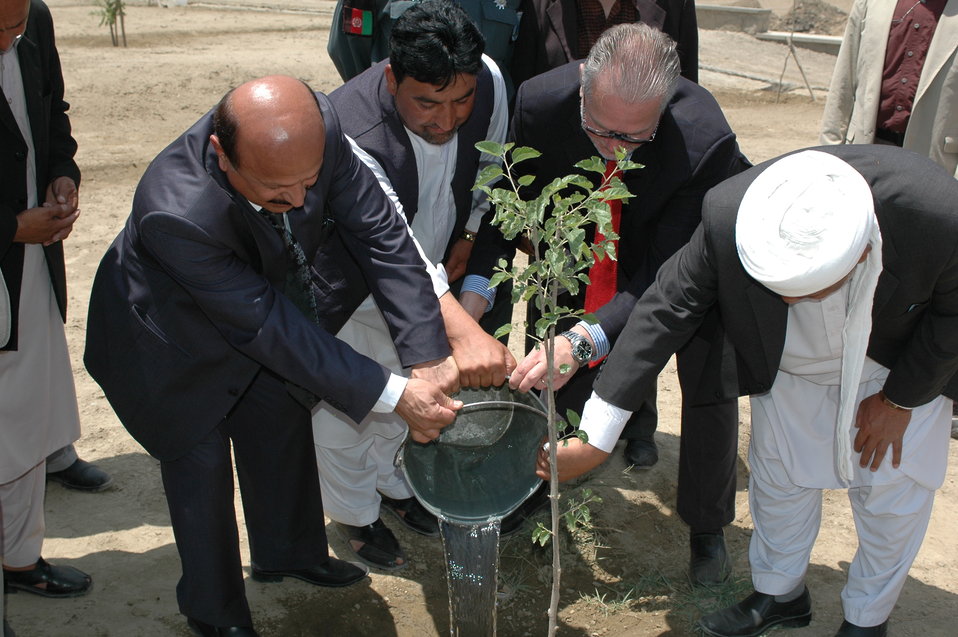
باغ تاریخی قاضی در شهر کهنه کابل بازسازی میگردد

کابل، افغانستان، 19 جون – شاروال کابل آقای محمد یوسف نواندیش، ریس اداره انکشافی بین المللی ایالات متحده امریکا (USAID)، کارمندان افغانی، مهمانان گرامی و مساعدت کننده گان بین المللی امروز در محفل نهال شانی که جهت گرامیداشت از آغاز مرحله دوم بازسازی باغ قاضی (یک باغ تاریخی در شهر کهنه کابل میباشد) برگزار گردیده بود، اشتراک نمودند.

اکثریت درختان این باغ تاریخی که مساحت آن 3.5 هکتاربوده، در دوران اشغال شوروی قطع شده بودند و از ساحه مذکور به حیث مندوی استفاده میشد که بعد ها محل تجمع کثافات و فضله جات انسانی گردید. سال گذشته شاروالی کابل تصمیم گرفت که باغ مذکور را به شکل اولی آن برگرداند و با یک موسسه غیر دولتی جرمنی یکجا کار پاک کاری و دور نمودن تعمیر های کهنه این ساحه را آغاز نمود.

بعد از پاک کاری ساحه که بیشتر از نیم باغ در حال تکمیل شدن است، حکومت ایالات متحده امریکا با مرکز کلتوری آغا خان Aga Khan Trust for Culture (AKTC) و شاروالی کابل دست هم داده که این پروژه را تکمیل نمایند. شاروال کابل آقای نواندیش اظهار داشت،' چند هفته قبل ما در پارک بی بی مهرو نوار را قطع نمودیم و من خیلی خرسندم که حالا بازسازی یک ساحه سبز دیگر را در اینجا شاهد هستیم. این جز برنامه ما بوده که میخواهیم کابل راسبز نماییم و امسال پلان داریم که حد اقل 10 پارک را در شهر کابل بازسازی نماییم.' شاروال کابل از سفارت امریکا و تمام مساعدت کننده های بین المللی که در بدست آوردن این هدف با شاروالی کار مینمایند، اظهار سپاس نمود.

باغ بازسازی شده که بزرگترین ساحه سبز در شهر کهنه کابل بوده، دارای چندین ساحه کوچک در میان درختان برای میله های فامیلی، میدان فوتبال و ساحه بازی برای اطفال، خواهد بود. کمک بلاعوض 533,000 دالری اداره انکشافی بین المللی ایالات متحده امریکا تکمیل بازسازی این پارک و همچنان ارزیابی دقیق شهر کهنه کابل را که در شناسایی پروژه های آینده برای این ناحیه کمک مینماید، تمویل خواهد نمود. ریس اداره انکشافی بین المللی ایالات متحده امریکا آقای بل فری اظهار داشت،' من ازمحترم شاروال نواندیش و رهبری عالی ایشان اظهار سپاس مینمایم که با جامعه بین المللی یکجا زمینه بازسازی این پارک ها مهیا نموده است. این نوع پروژه ها ساحه سبز را برای شهروندان کابل مهیاخواهند نمود که از طبیعت لذت ببرند و اداره انکشافی بین المللی ایالات متحده امریکا در کمک به مردم افغان و خصوصا درراستای بازسازی شهرکابل متعهد میباشد.'
طبق اظهارات معاون مرکز کلتوری آغا خان(AKTC)، اقای اجمل میوندی، بازسازی این باغ طی سال جاری تکمیل خواهد شد و حتی نهال شانی سال آینده هم ادامه خواهد نمود.